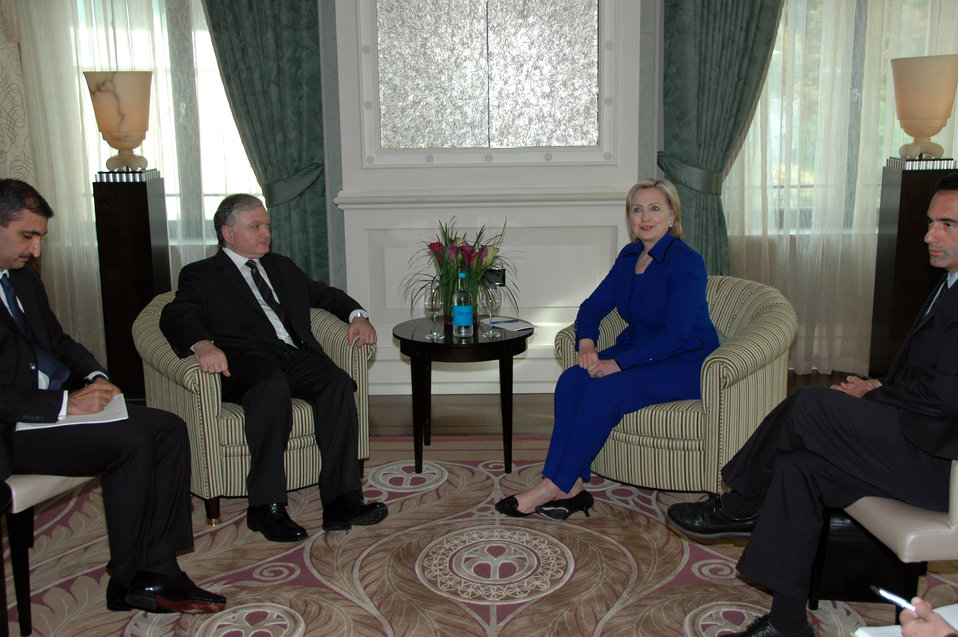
Secretary Clinton Meets With Armenian Foreign Minister

U.S. Secretary of State Hillary Rodham Clinton with Armenian Foreign Minister Edouard Nalbandian in Zurich, Switzerland October 9, 2009.